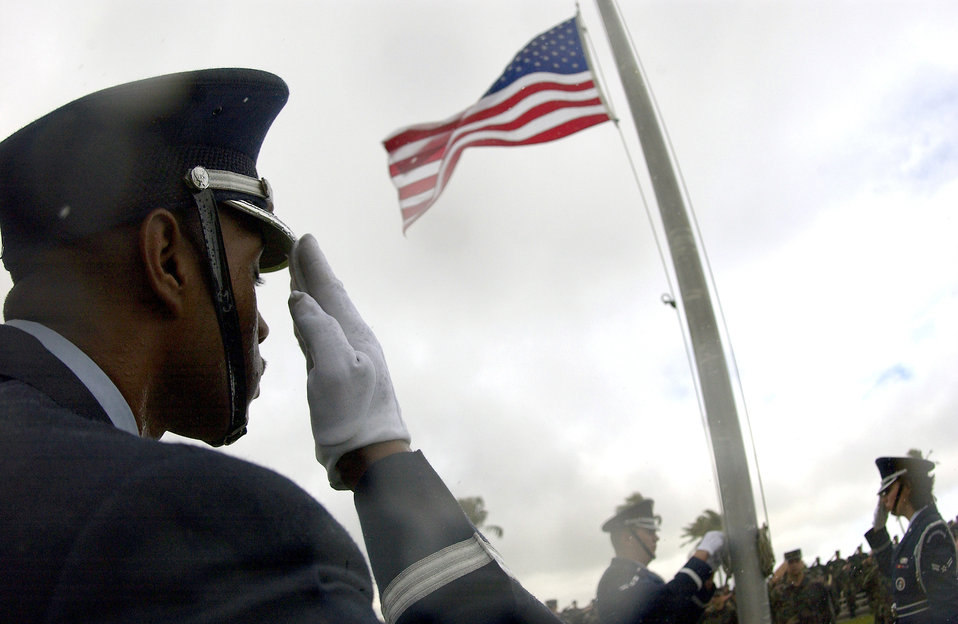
Paying tribute

ANDERSEN AIR FORCE BASE, Guam -- Staff Sgt. John Christian (foreground) salutes as Airmen 1st Class Curtis Latham (left) and Kristin Ruleau, members of the base Blue Knights Honor Guard, lower the flag to half-mast in honor of fallen Airmen during a ceremony here Dec. 17 to mark the 32nd anniversary of Arch Light. The base's Arc Light Memorial Park is a tribute to the 33 Airmen from Andersen AFB and to the 75 other Airmen who lost their lives flying B-52 missions during Operation Linebacker II against communist forces in Vietnam between June 18, 1965, and Aug. 15, 1973.